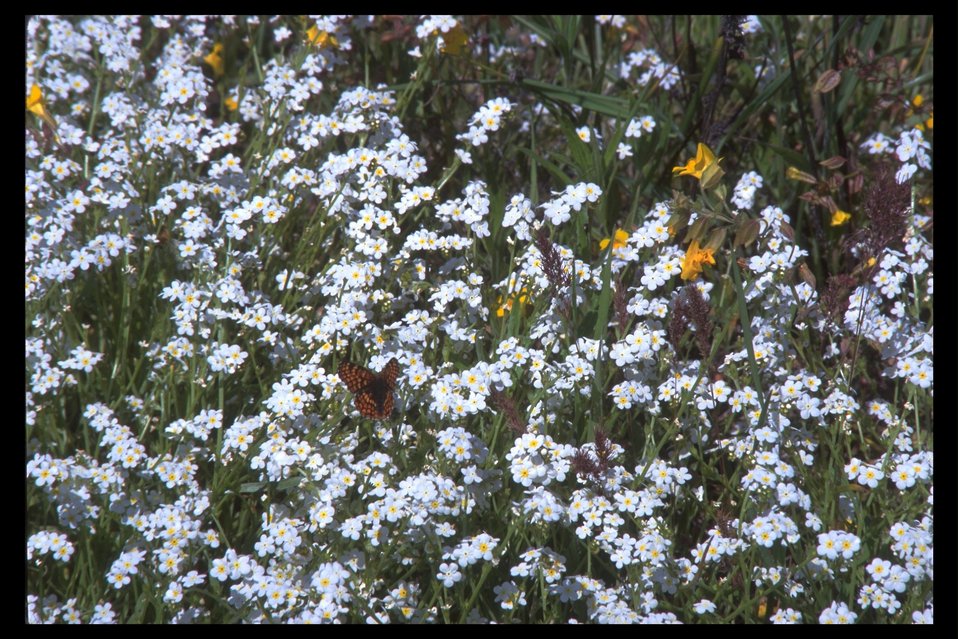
Fragrant Popcorn flower (Plagiobothrys figuratus).